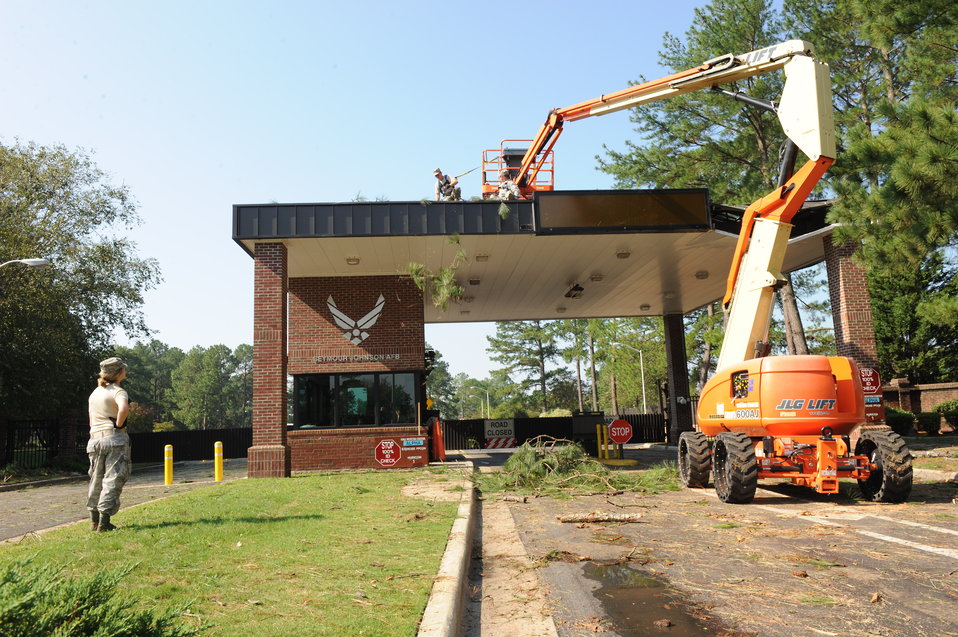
SJAFB cleans up after Irene

Staff Sgt. Adam Smith and Airman 1st Class Calvin Myers remove branches from atop the Berkeley Gate guard shack while Senior Airman Keny Brown looks on at Seymour Johnson Air Force Base, N.C., Aug. 28, 2011. The majority of base services were closed Aug. 27 in preparation for Hurricane Irene’s projected destructive path up the Carolina coast. All three Airmen are from the 4th Civil Engineer Squadron Structures Shop.